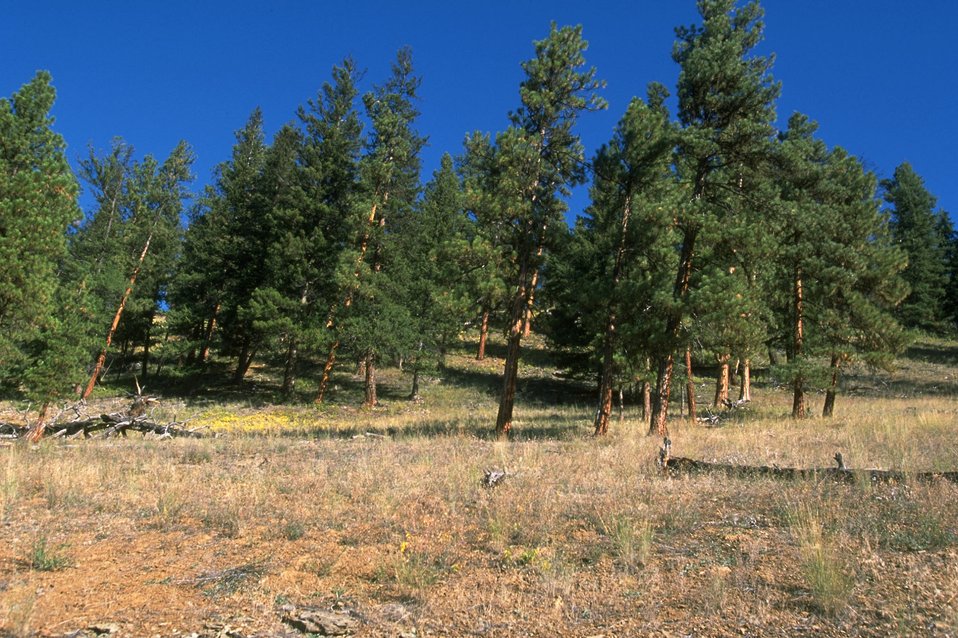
Pine stand along Road to the Buffalo non-motorized trail